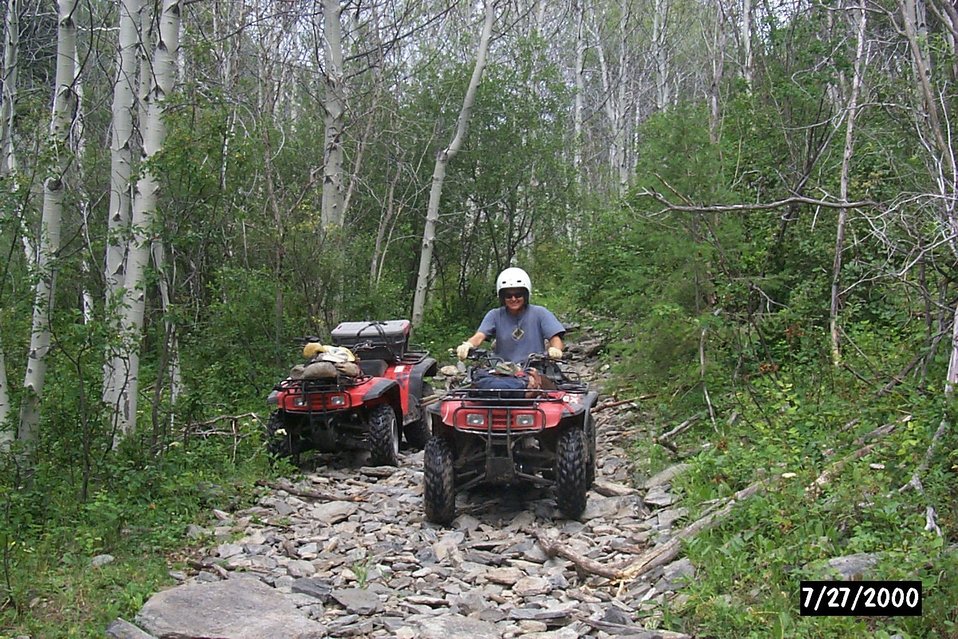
ATV People Salmon Field Office UCSC Upper Columbia Salmon Clearwater District